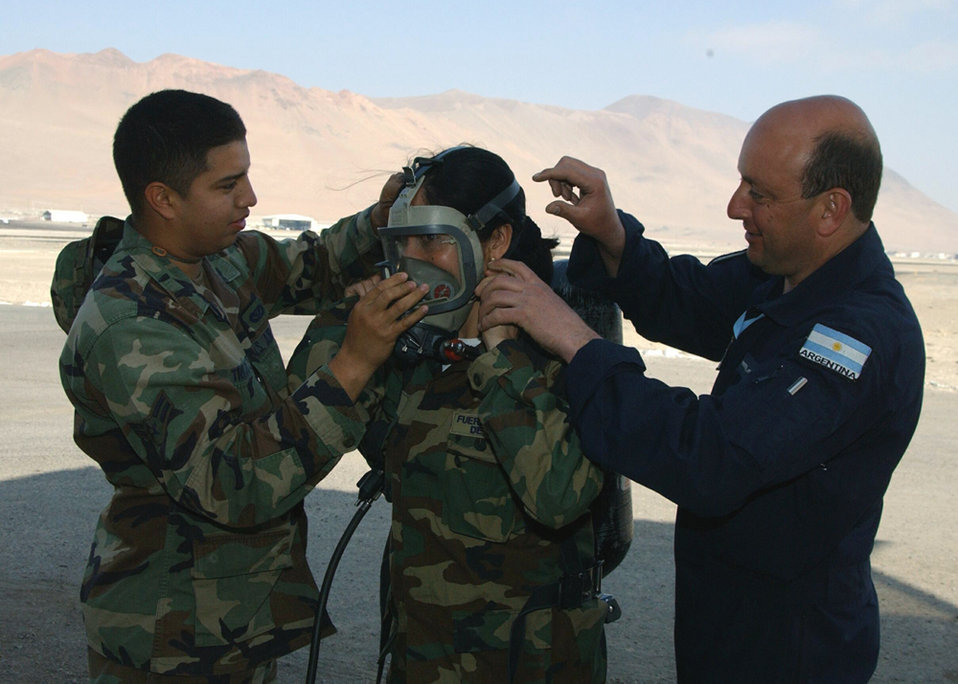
Not just Chilean

IQUIQUE, Chile -- Airman 1st Class Larry Trejos (left) and Argentinean air force Master Sgt. Omar Daniel Grosso help Chilean air force Tech. Sgt. Juana Rivas properly adjust an oxygen mask Oct. 1 at Los Condores Air Base here. The Airmen are participating in Salitre 2004, a two-week multinational air combat training exercise among Chile, Argentina, Brazil and the United States. More than 100 U.S. active-duty and Air National Guard Airmen are participating in the exercise. Airman Trejos is assigned to the 28th Civil Engineer Squadron at Ellsworth Air Force Base, S.D.